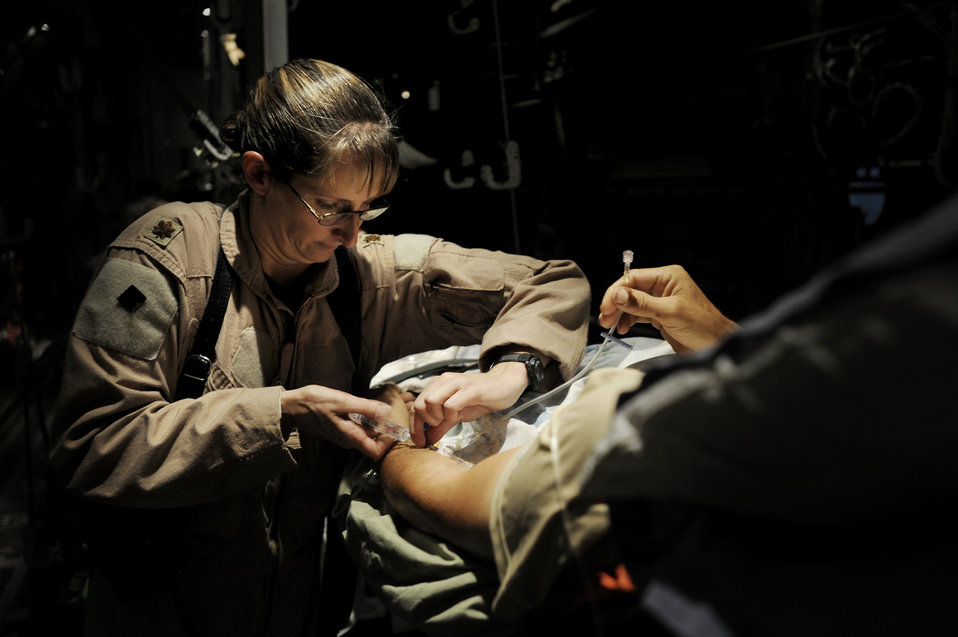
Flying hospital staff gives wounded fighting chance

Maj. Missy Steckler provides care to a patient during a flight to a location that can provide a higher level of medical care. Major Steckler is a flight nurse assigned to the 451st Expeditionary Aeromedical Evacuation Flight at Kandahar Airfield, Afghanistan.